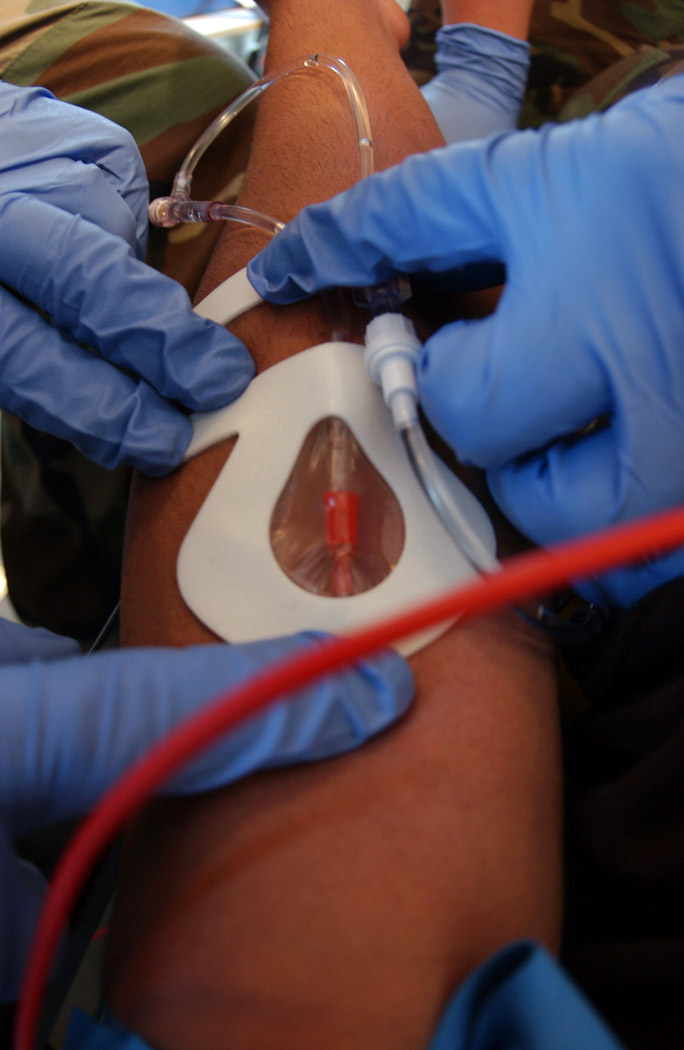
Quick care

EIELSON AIR FORCE BASE, Alaska -- Ambulance crewmembers start an IV line on a